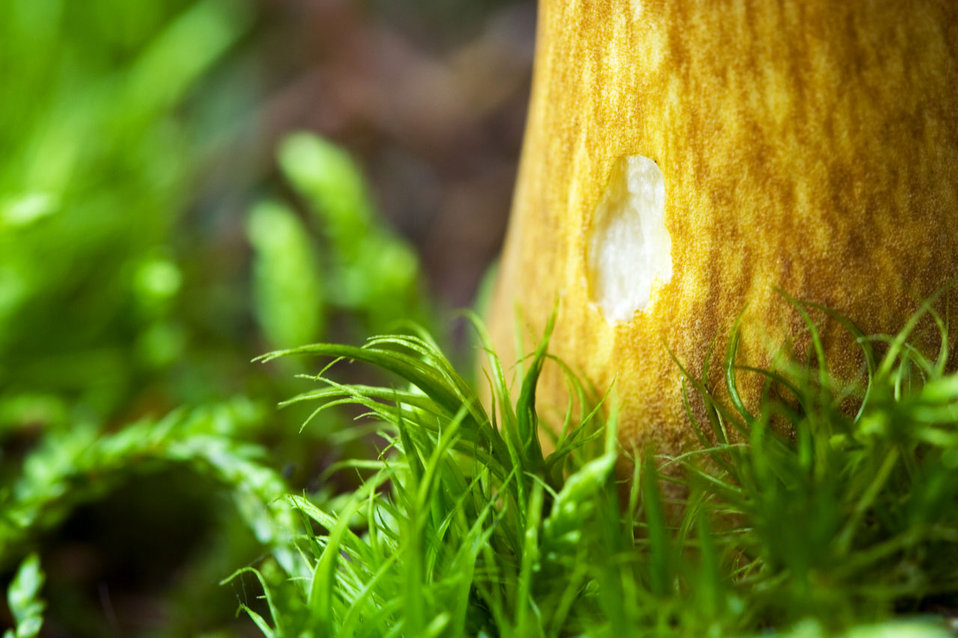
Close-up mushroom

A macro photo of a wild mushroom.